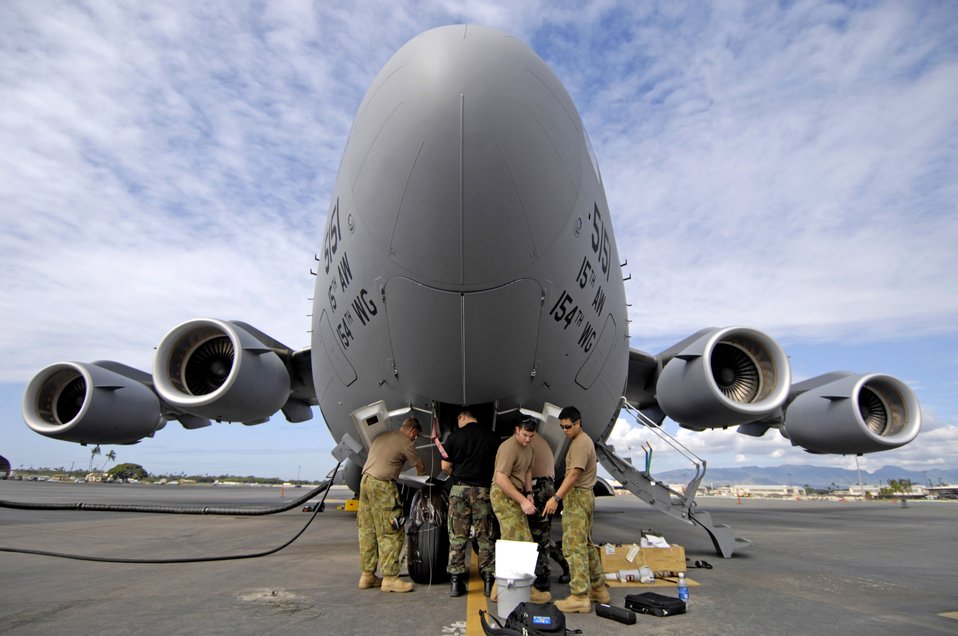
Side by side

U.S. and Australian maintainers work on a C-17 Globemaster III nose steering actuator at Hickam Air Force Base, Hawaii, Oct. 19. Maintainers from Amberly Royal Australian Air Force Base are working alongside their U.S. Air Force counterparts to learn about the C-17.